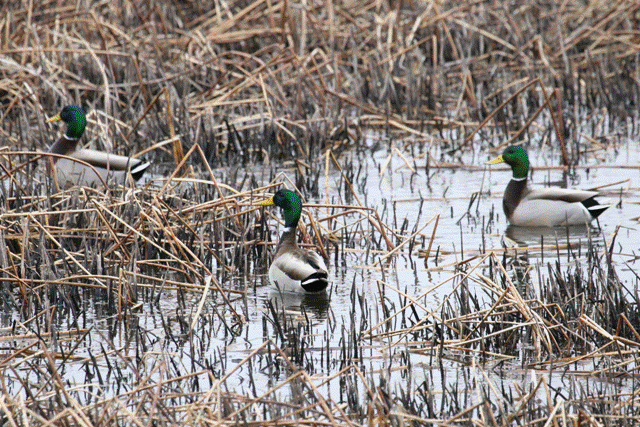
Drake Mallards